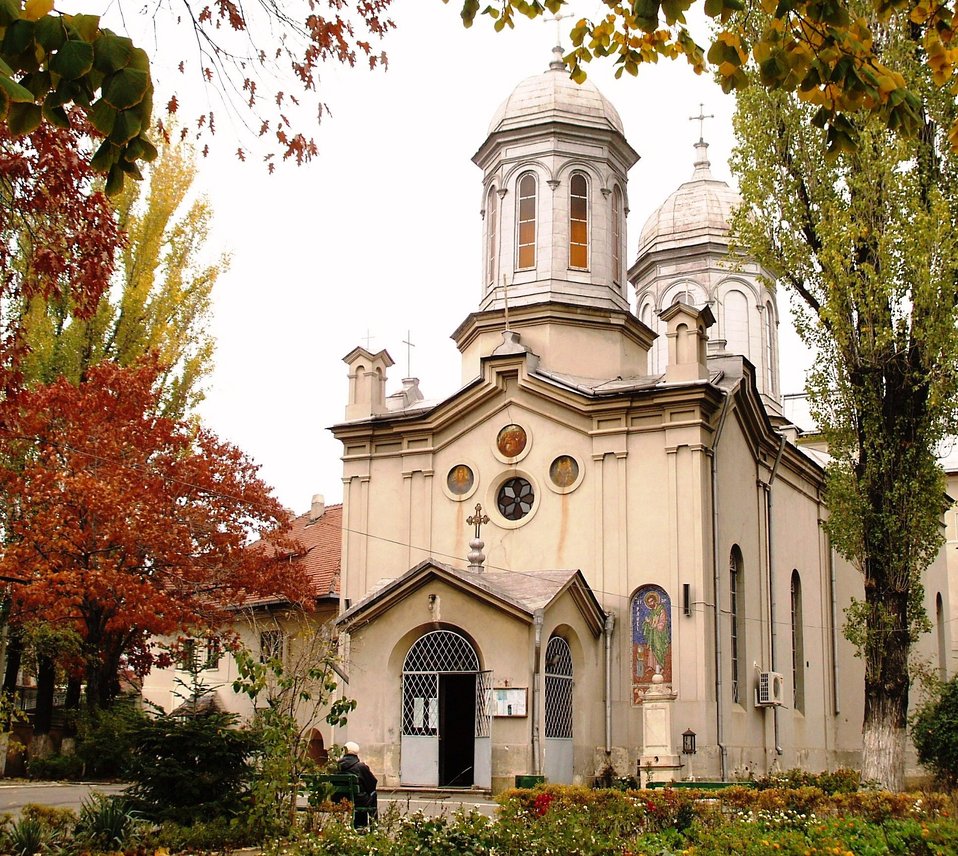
Română: Biserica Hagiu, Bucureşti